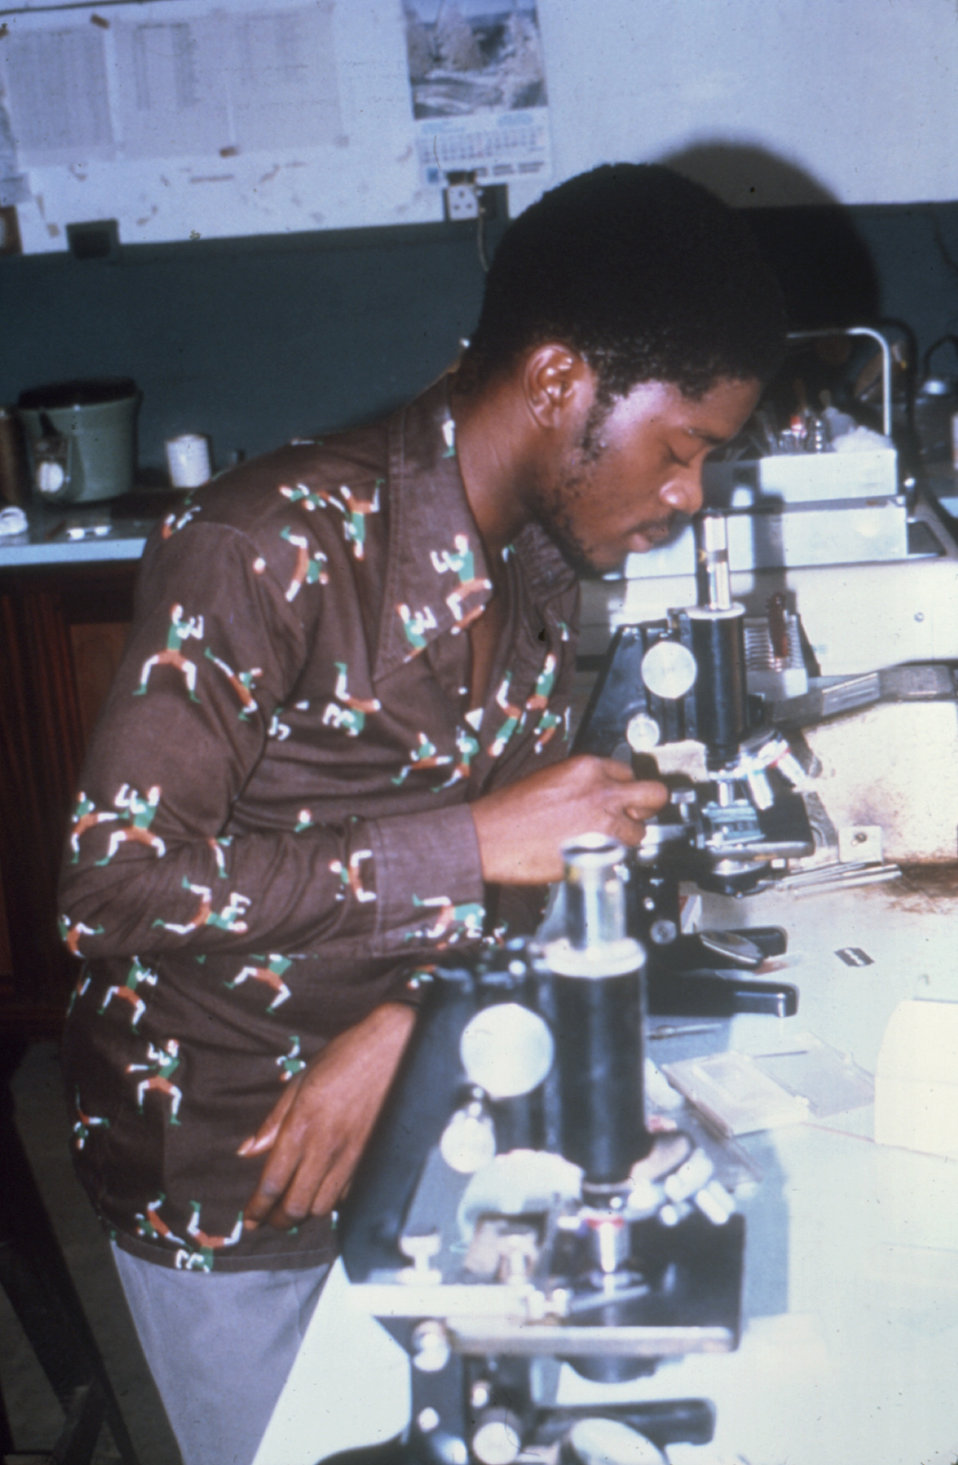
Jusu, here in a Segbwema, Sierra Leone laboratory is looking through a microscope during a Lassa fever investigation.